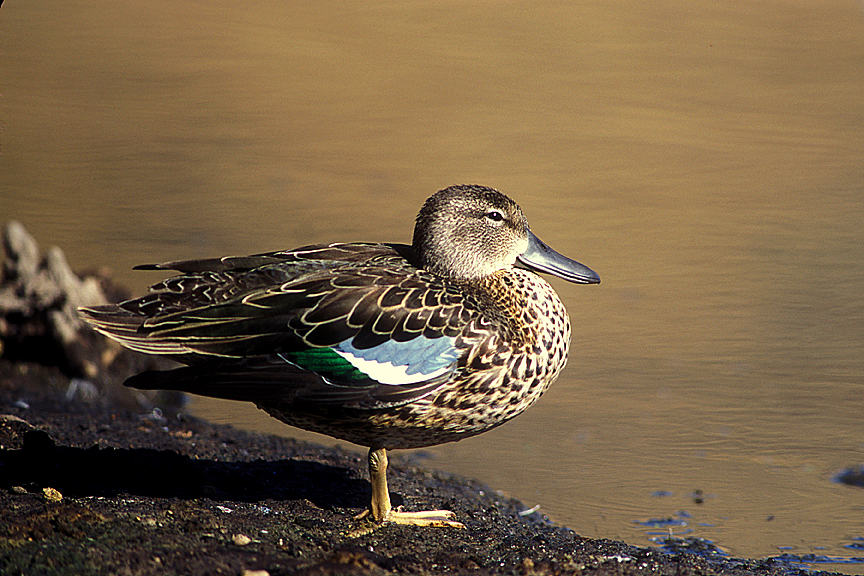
Cinnamon Teal (female)